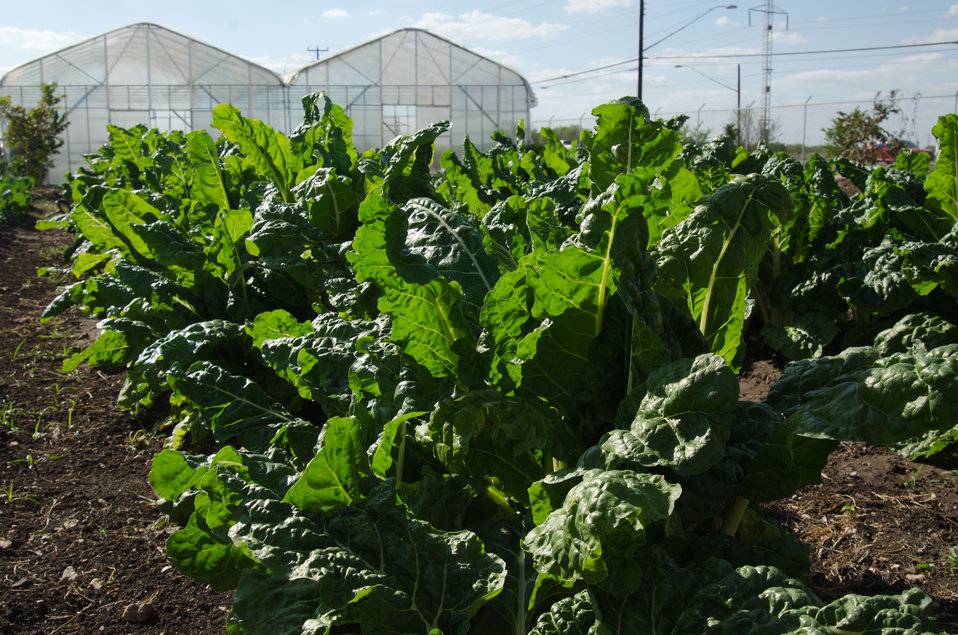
The Spurs Community Garden is part of the San Antonio Food Bank’s Nutrition Education Program and provides garden fresh organic produce to one of it’s sponsors, the United States Department of Agriculture (USDA) Supplemental Nutrition Assistance Program - Education Program (SNAP-ED). This produce is used for presentations about nutrition education, economical ways to increase fruit and vegetable consumption and physical exercise on it’s walking trail to get fit in San Antonio, TX, on Monday, October 31, 2011. The 5.5-acre garden has a teaching/demonstration garden, large –production gardens, and bee hives. In its first year of operation the garden produced 2,640 pounds of produce and attracted 602 volunteers to support it’s operation and improvement. Most of the produce goes to the more than 500 human service agencies and used in its Community Kitchen to support various meal programs, some of which are supported by the USDA. (For more information go to safoodbank.org/index.php/programs/nutrition/community-garden).
“We couldn’t do what we do without our partnership with USDA’” said President and CEO Eric Cooper. He continues, “We are privileged in partnering (with the USDA) to feed kids, through the summer, with the Summer Food Service Program, and throughout the year, with the Child and Adult Care Feeding Program (CACFP). Then in our approach to feeding seniors, we partner with USDA in the CSFP, and the Senior Farmer’s Market (Nutrition) Program. Through the support of the SNAP-Education Program we are able to educate them during their time of need. With this comprehensive approach we are really able to get the right food, the right amount, at the right time, to needy families throughout our community – which allows us to feed the fifty-eight thousand we do, each week.”
SAFB serves 16 counties in Southwest Texas and states, “Nearly one out of every four children and one out of every five adults in Southwest Texas lives in poverty and has difficulty meeting basic nutritional needs.” According to SAFB, sixty-five percent of the people requesting emergency food have children. “Additionally, the senior citizens and those living on a fixed income generally have limited funds for a consistent grocery budget.” USDA photo by Lance Cheung.

www.fns.usda.gov/fns/
www.fns.usda.gov/snap/
www.fns.usda.gov/snap/nutrition education/default.htm